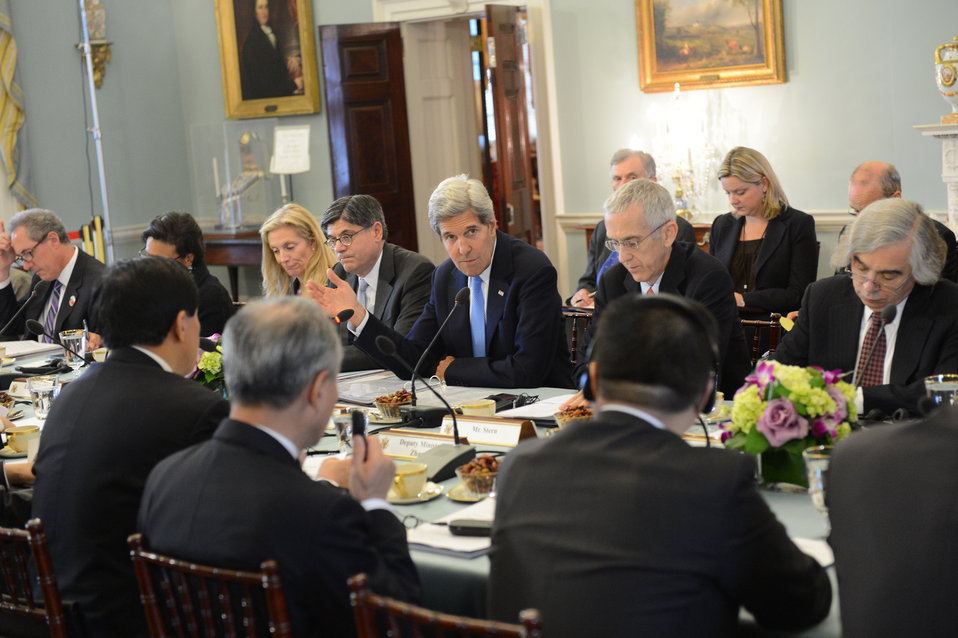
Secretaries Kerry and Lew, Chinese State Councilor Yang, and Chinese Vice Premier Wang Participate in the Joint Session on Climate Change

U.S. Secretary of State John Kerry, U.S. Secretary of the Treasury Jacob Lew, Chinese State Councilor Yang, and Chinese Vice Premier Wang participate in the U.S.-China Economic and Strategic Dialogue Joint Session on Climate Change at the U.S. Department of State in Washington, DC on July 10, 2013.